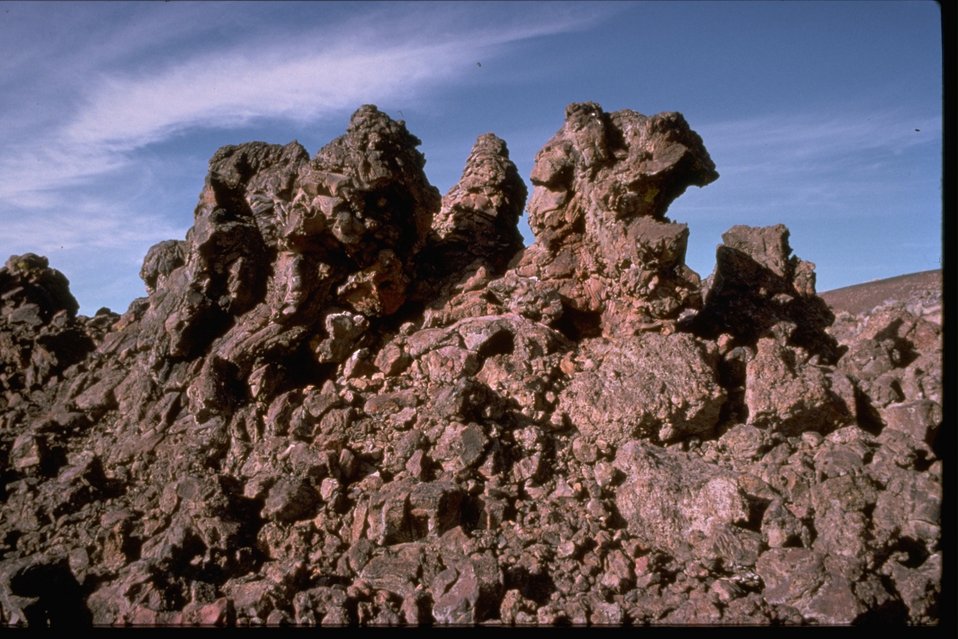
Spitting cone lava formations.